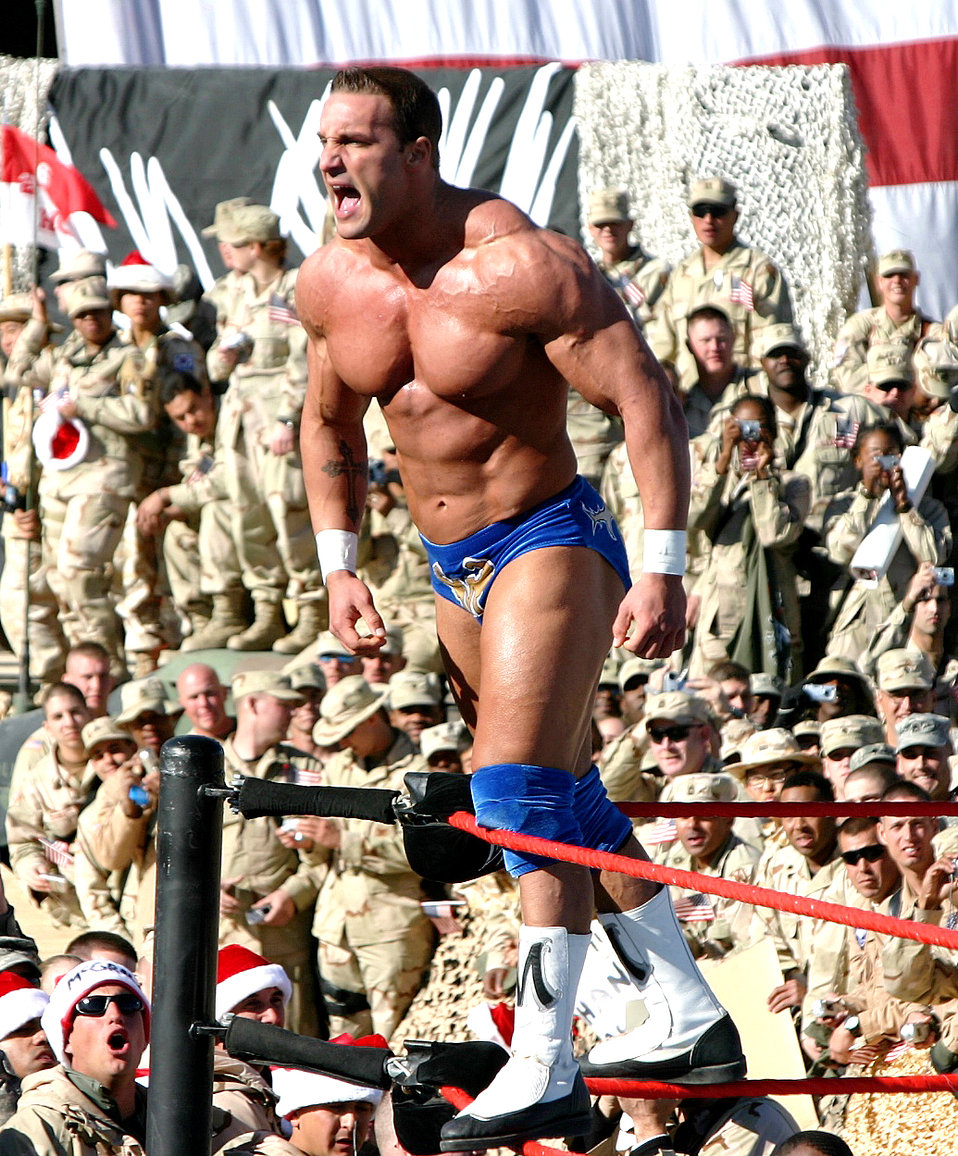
Wrestlers end tribute to troops tour

BAGRAM AIR BASE, Afghanistan (AFPN) -- Wrestler, Chris Masters yells out to Airmen during the World Wrestling Entertainment's